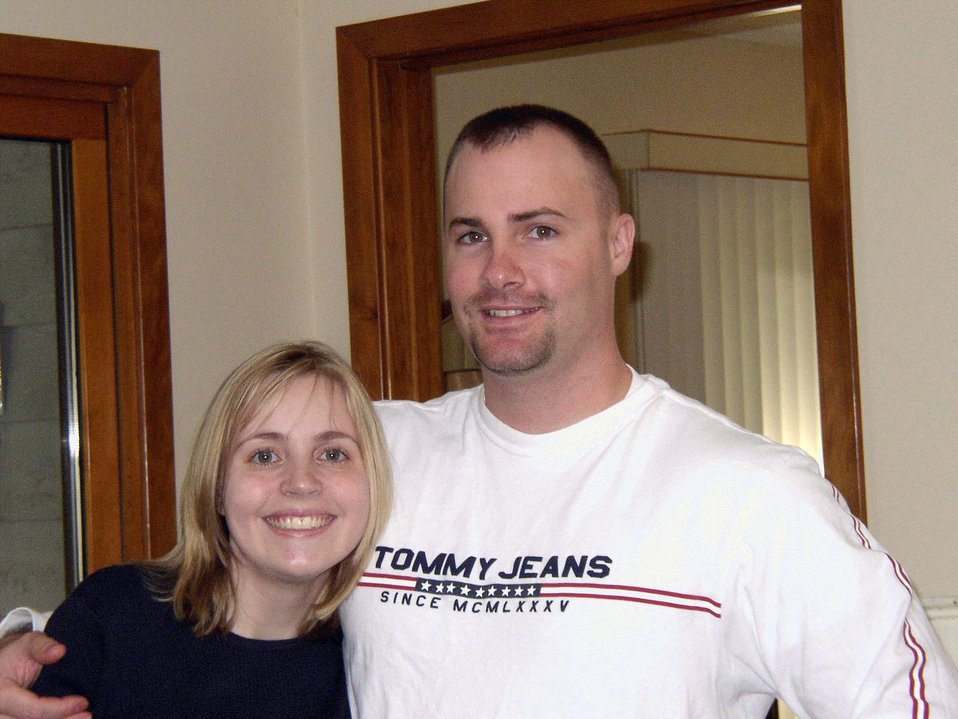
Breathing easier

POPE AIR FORCE BASE, N.C. -- Theresa Merkal, with husband 2nd Lt. Brian Merkal, had only 30-percent lung function before a double lung transplant in December. Mrs. Merkal was diagnosed with cystic fibrosis at age 2. The Merkals moved here shortly before her transplant under the Humanitarian Reassignment Program. Lieutenant Merkal is assigned to the 43rd Security Forces Squadron here.